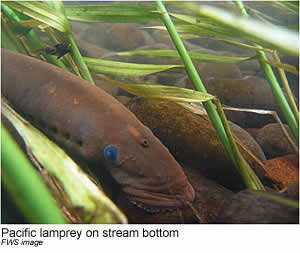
Pacific Lamprey - Adult

An adult lamprey on the bottom of a stream.